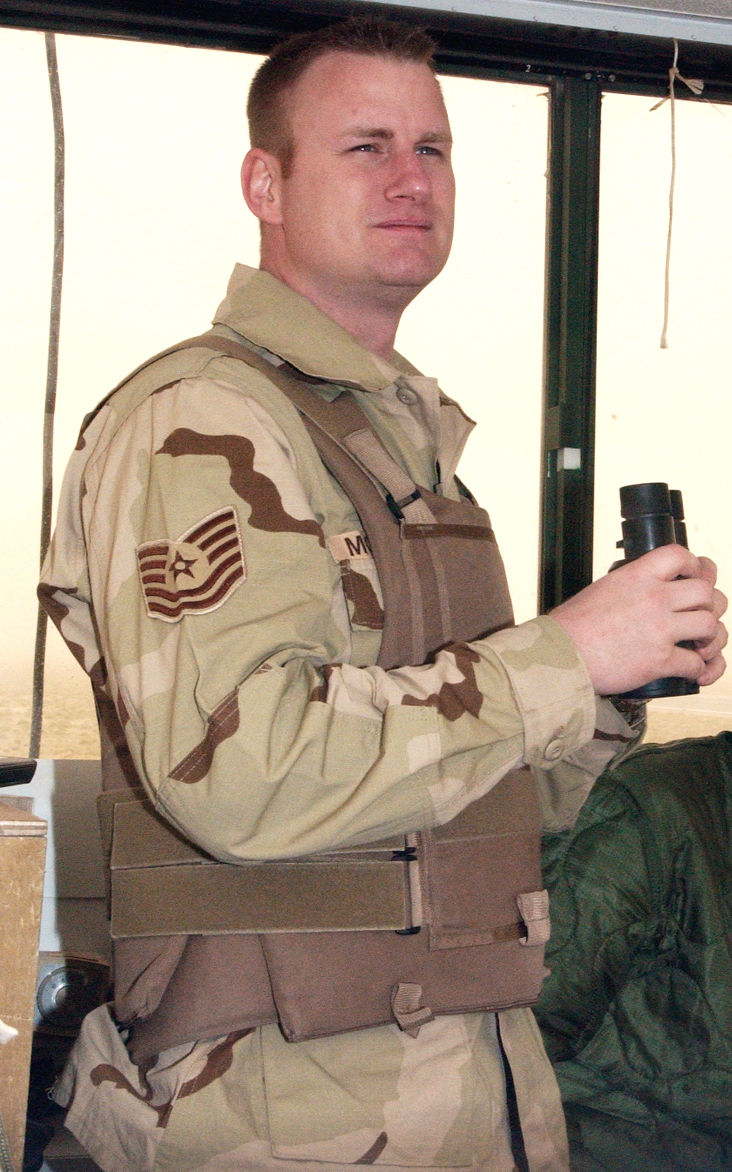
Morrison

OPERATION IRAQI FREEDOM -- Tech. Sgt. Mark Morrison scans the airfield at a forward-deployed location. He is an air traffic controller with the 332nd Expeditionary Operations Support Squadron and is deployed from the 46th Operations Support Squadron at Eglin Air Force Base, Fla.